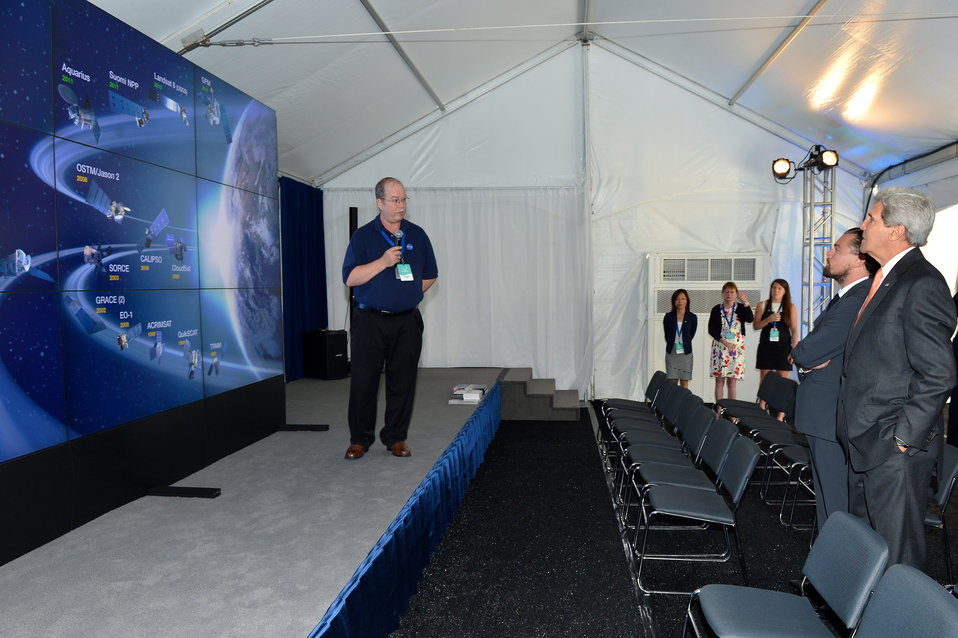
Secretary Kerry and Leonardo DiCaprio Attend an Exhibit at the 'Our Ocean' Conference

U.S. Secretary of State John Kerry and Leonardo DiCaprio attend an exhibit at the 'Our Ocean' Conference at the U.S. Department of State in Washington, D.C on June 17, 2014.